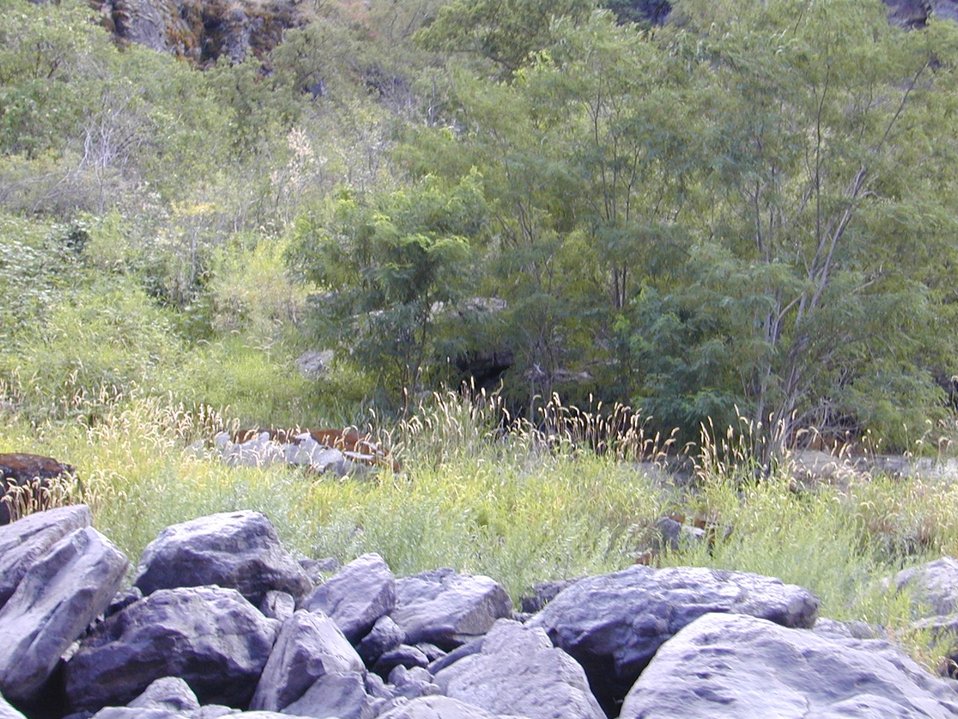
Rocks along the Lower Salmon River Cottonwood Field Office UCSC Upper Columbia Salmon Clearwater District